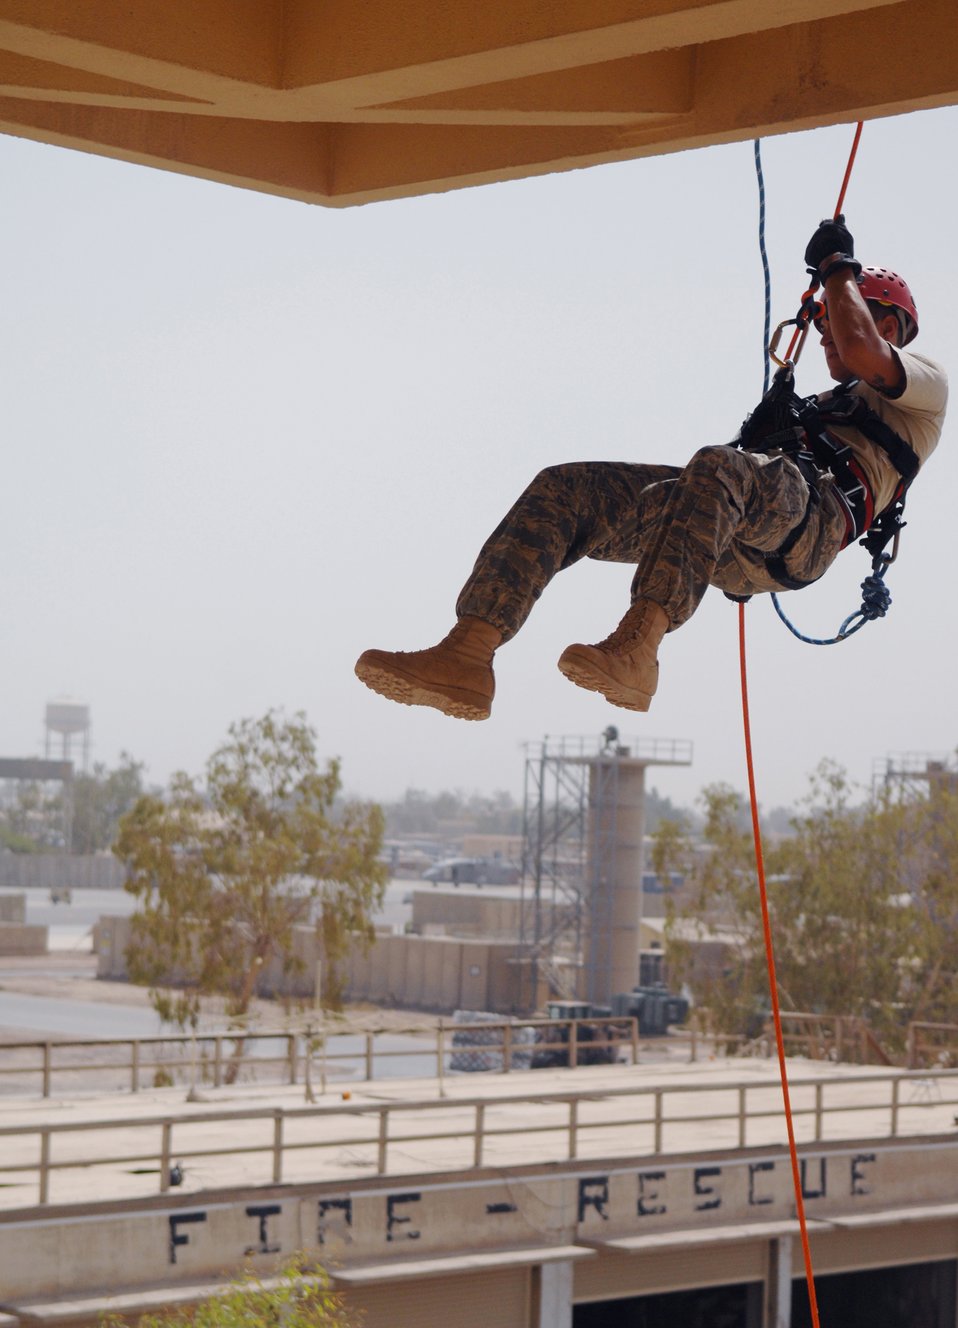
Balad firefighters rappel tower

Senior Airman Sean Reagan rappels down the edge of the control tower during a training exercise Aug. 20, 2009, at Joint Base Balad, Iraq. He is a firefighter with the 332nd Expeditionary Civil Engineer Squadron.